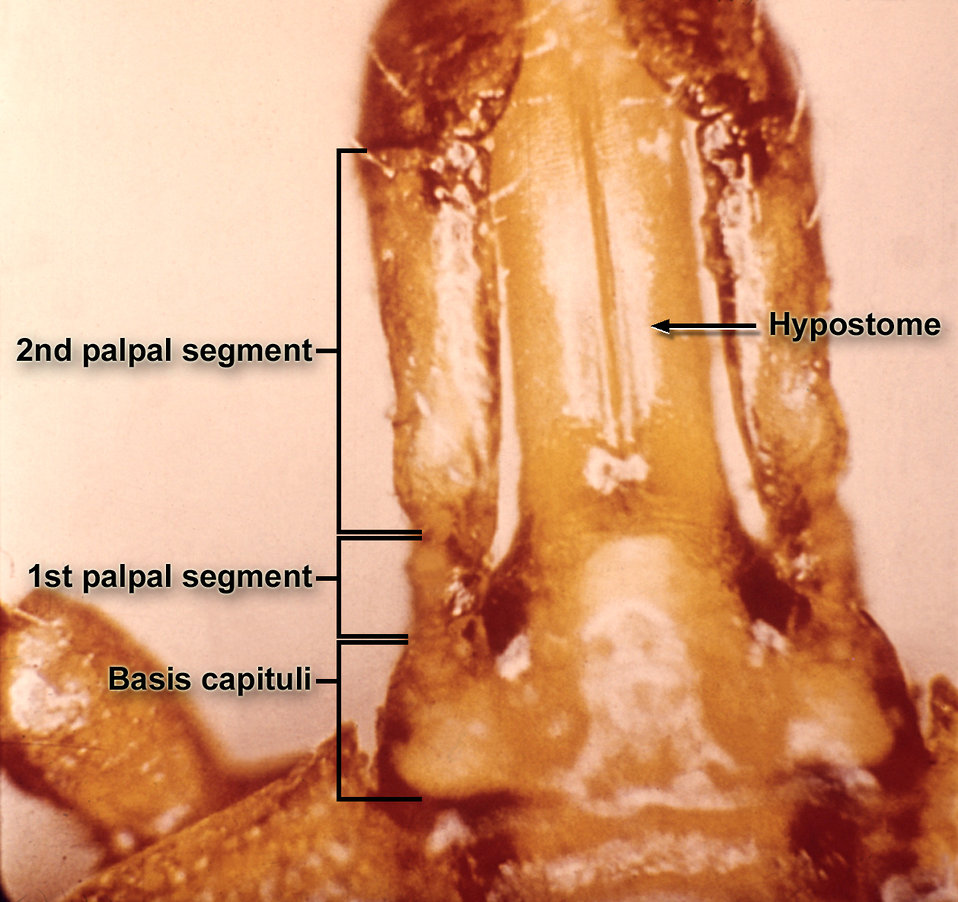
This is a close-up of the typical tick mouthparts consisting of a centrally located hypostome, and two lateral segmented palps.